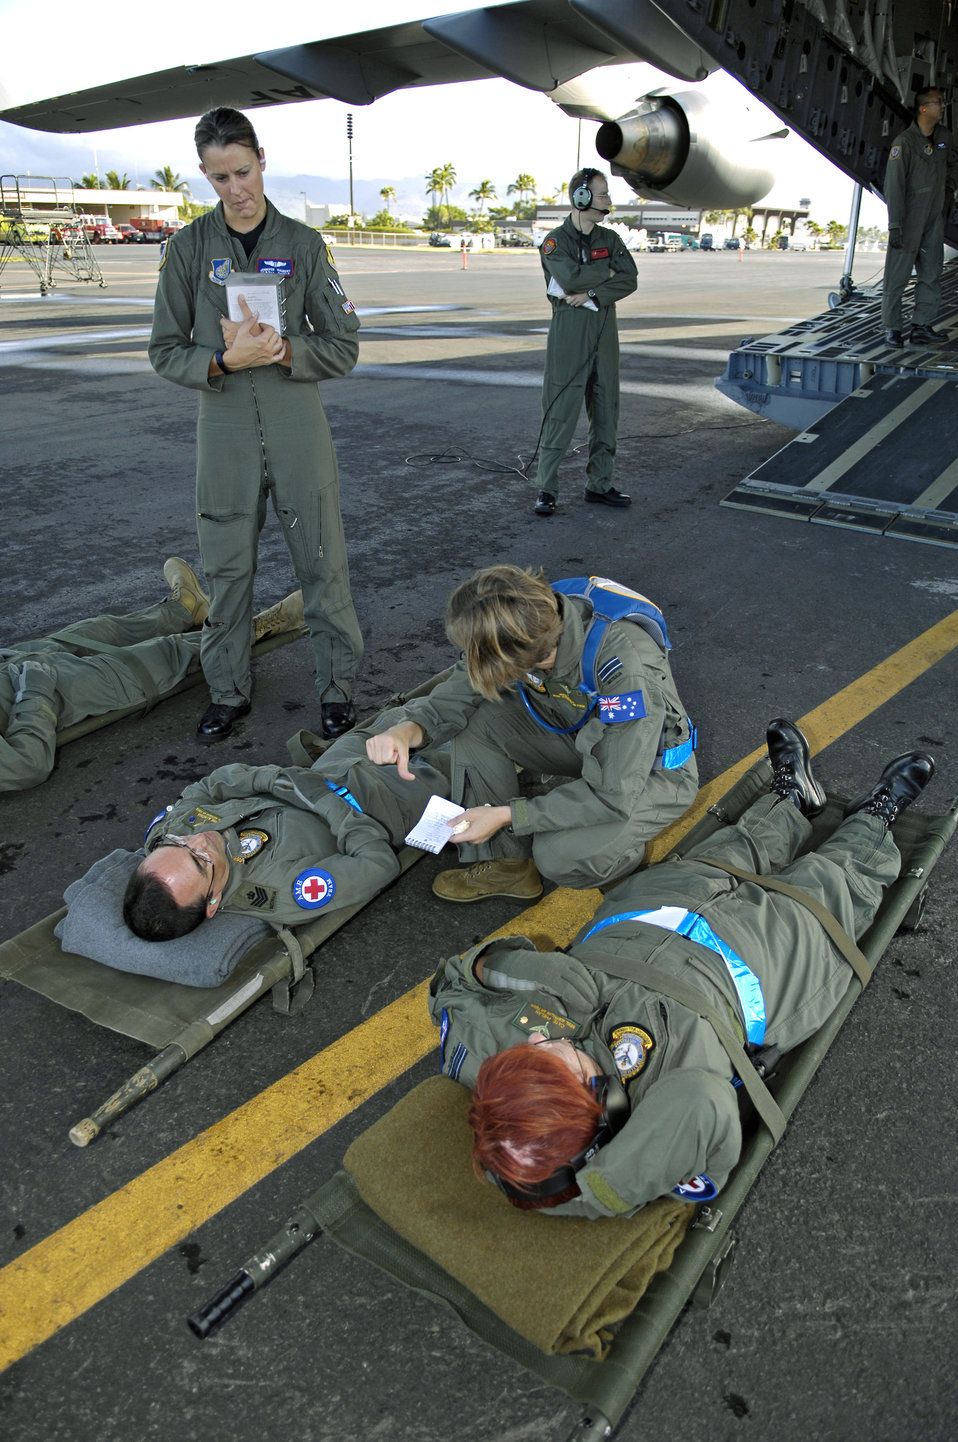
Australians train to save lives on C-17

Capt. Jennifer Haubert observes as Royal Australian Air Force Fight Lt. Robyn Tatnell briefs litter patients before they are loaded on to a C-17 Globemaster III Oct. 16 during aeromedical evacuation operations training at Hickam Air Force Base, Hawaii. Airmen from the 18th Aeromedical Squadron at Kadena Air Base, Japan, are at Hickam to train RAAF medical personnel who will be using specialized equipment and the C-17 for aeromedical evacuation. Captain Haubert is with the 18th AMS.